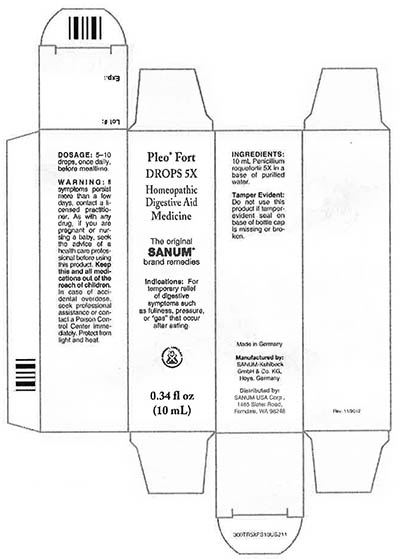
RECALLED – Homeopathic Drug Products

March 18, 2014 – Product Recall – Terra-Medica Issues Voluntary Nationwide Recall of Specified Lots of Pleo Homeopathic Drug Products Due to the Potential for Undeclared Penicillin.